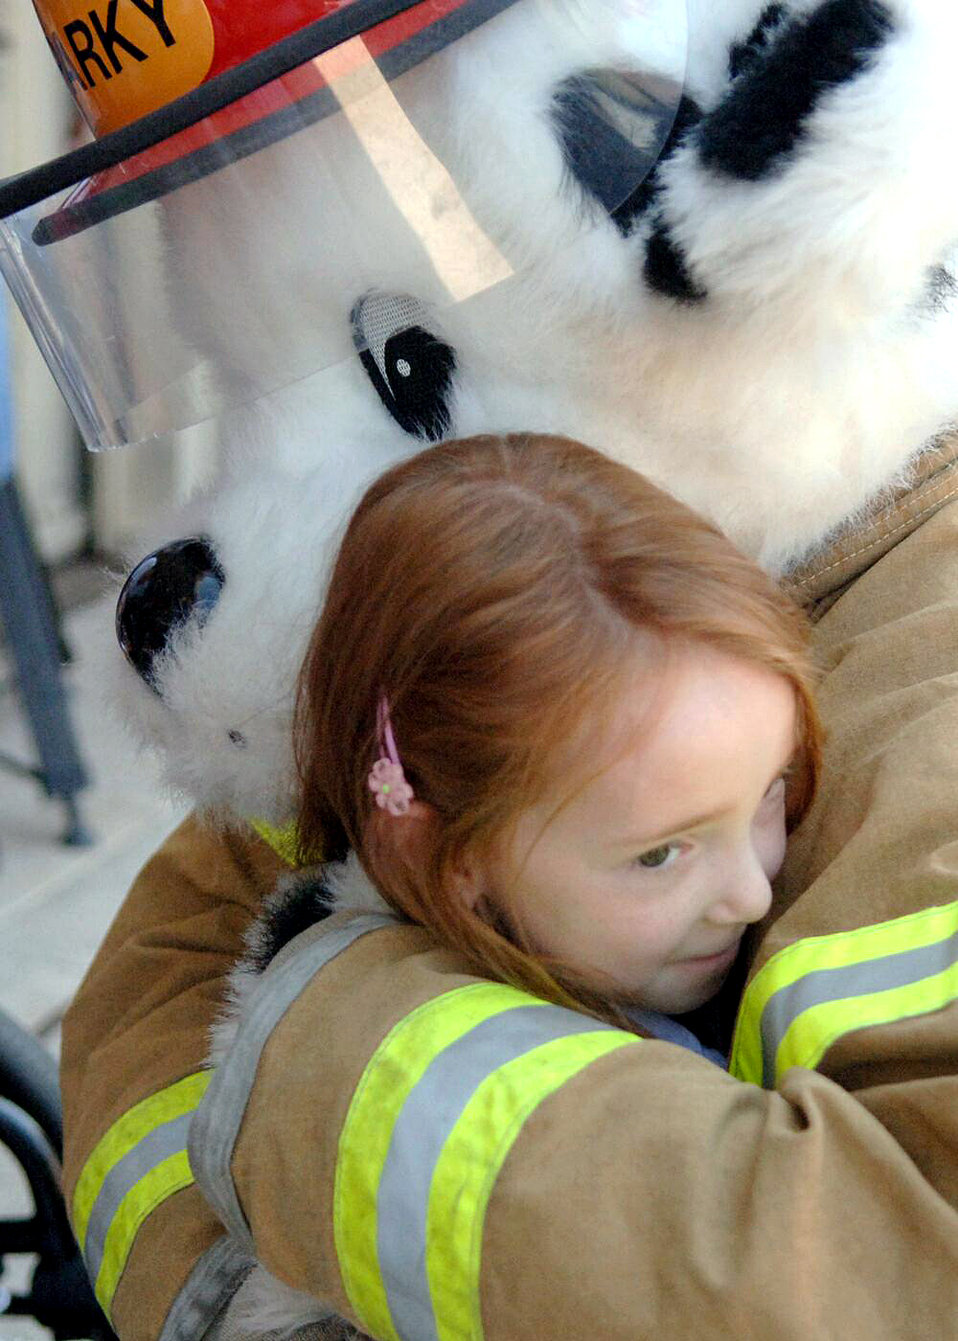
Make-A-Wish

Hannah Mockbee hugs Sparky the fire safety dog during a tour of Davis-Monthan Air Force Base, Ariz., on July 17. The Make-A-Wish Foundation teamed with Davis-Monthan to offer a tour of the base for Hannah and other Make-A-Wish children as well as their families. The tour consisted of demonstrations by an explosive ordnance disposal robot, base fire department and a weapons load crew for an A-10 Thunderbolt II. Hannah is the daughter of Jeff and Stacie Mockbee.